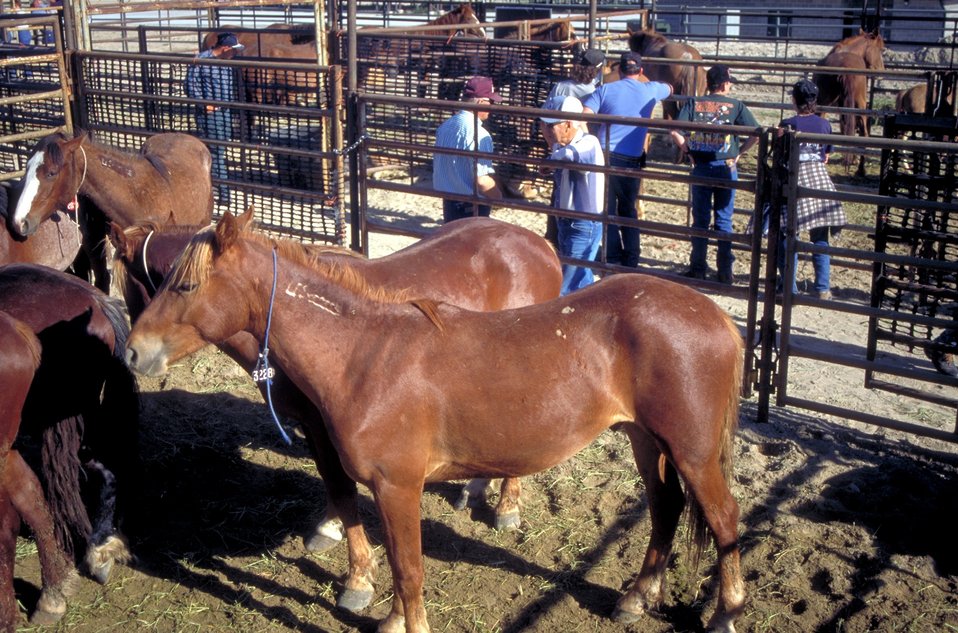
Utah Annual Wild Horse Festival.